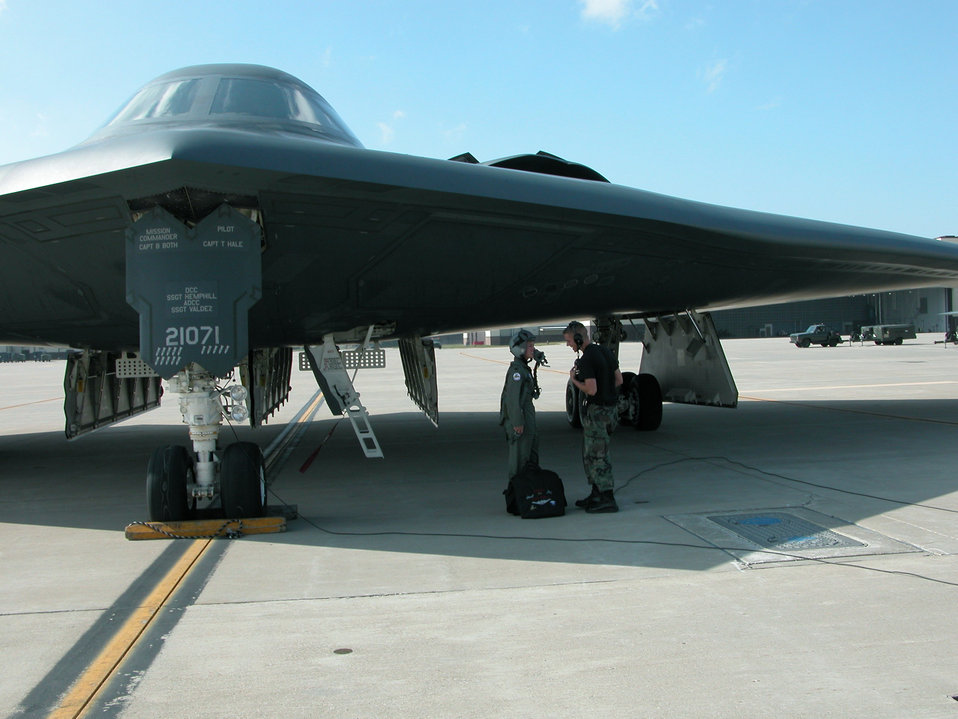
First 'unmanned' B-2 takes flight

WHITEMAN AIR FORCE BASE, Mo. -- Maj. Kristin Goodwin speaks with a crew chief before she and Capt. Jenn Jeffords fly a training sortie in a B-2 Spirit bomber Oct. 18. Flying the Spirit of Mississippi, they practiced conventional bombing and refueled with a KC-135 Stratotanker from Altus Air Force Base, Okla. The Airmen are assigned to the 325th Bomb Squadron here. Major Goodwin has been a B-2 pilot since May 2002; Captain Jeffords became B-2-certified in August.